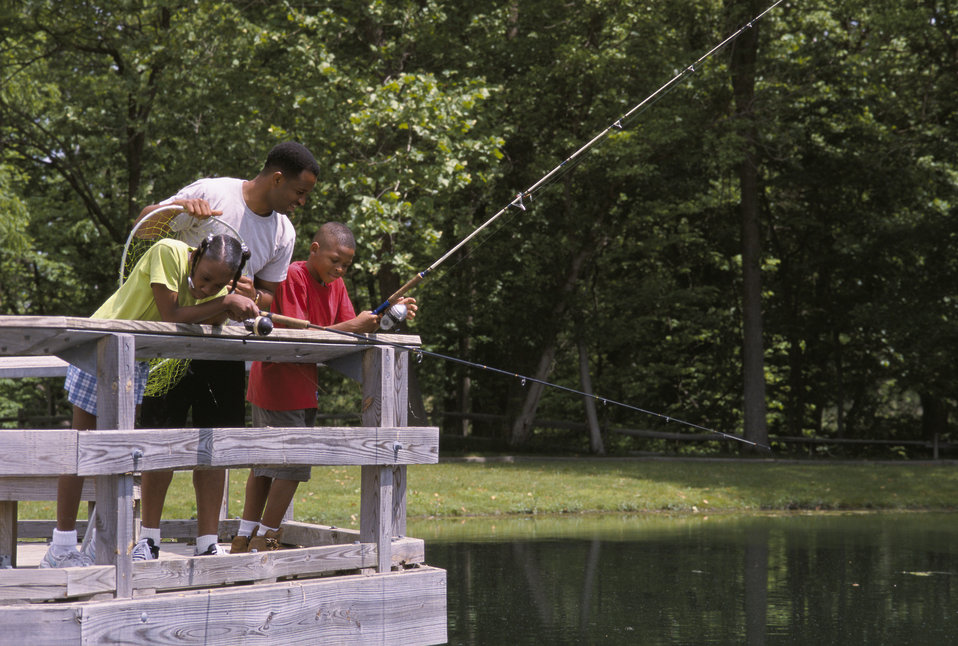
Family fishing from a bridge at a local pond

Family fishing off a bridge and a local pond.